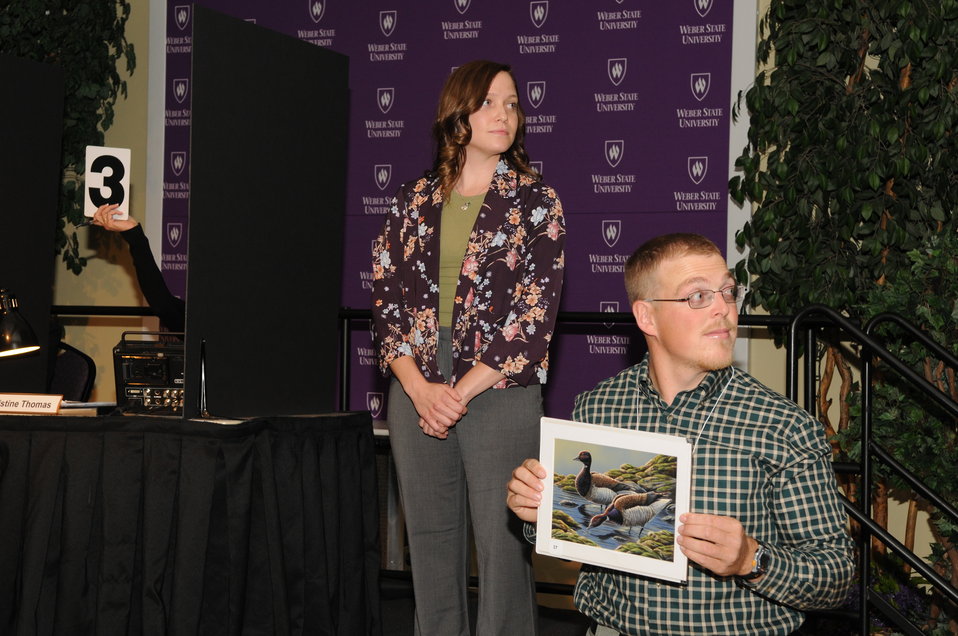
Artwork Presentation

The U.S. Fish & Wildlife Service sponsored the 2012 Federal Duck Stamp Art Contest September 28 and 29 in Ogden, Utah, at Weber State University. A panel of five judges was responsible for choosing the art work used to design the 2013-2014 Migratory Bird Hunting and Conservation Stamp.